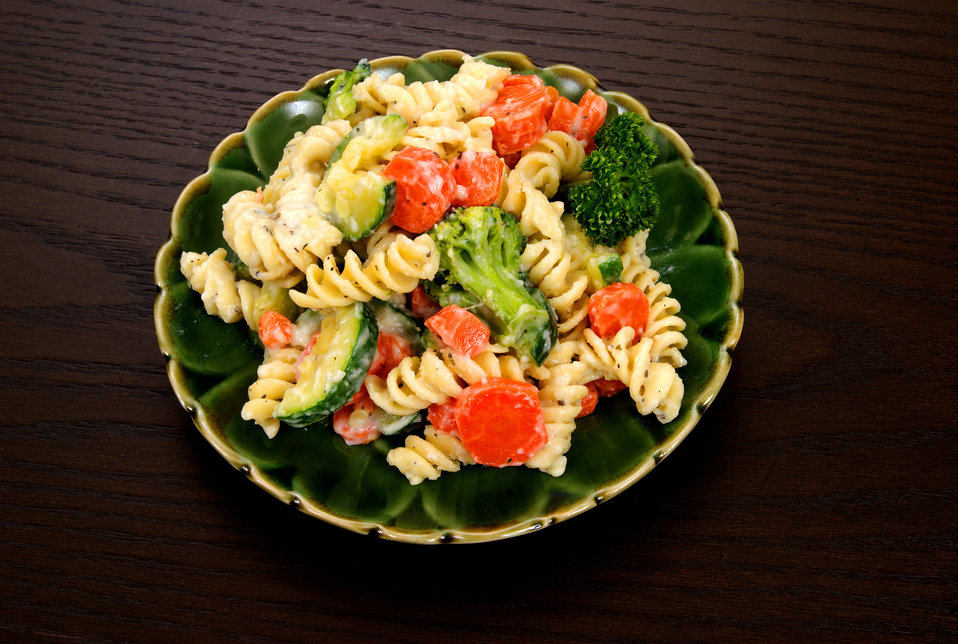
This image depicts a close view of a serving of Pasta Primavera, which had been taken from a larger plate of the salad, depicted in PHIL 13066.